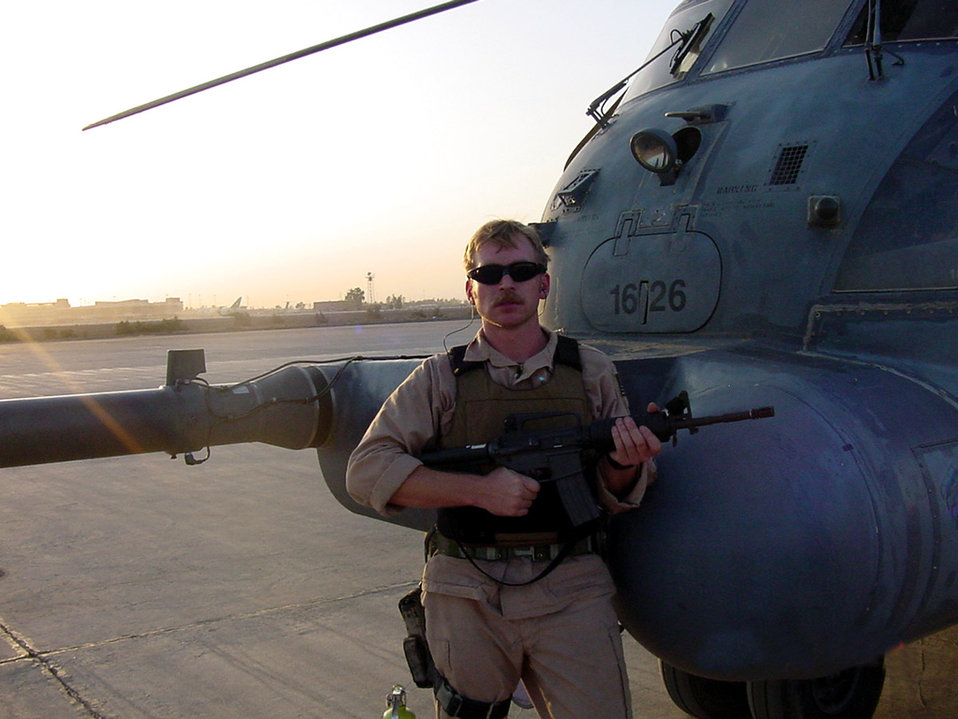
Wounded NCO's will to fly remains undaunted

Tech. Sgt. Christian MacKenzie poses stands next to an Air Force special operations MH-53 Pave Low helicopter July 12, 2003, at Baghdad International Airport. Sergeant MacKenzie served as a flight engineer on the helicopter and flew low-level, long-range, undetected missions into enemy territory, day or night, in all kinds of weather, to insert, extract and resupply special operations forces.